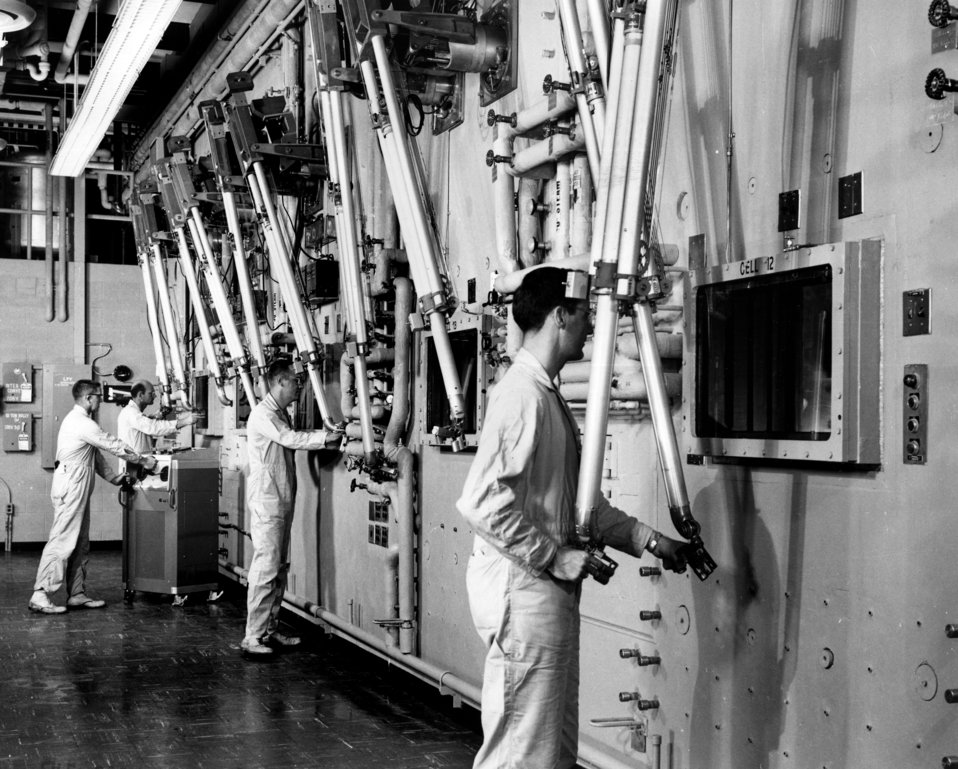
Operators Using Mechanical Arms at Hot Cells ORNL

58-466-b DOE photo Ed Westcott 6-9-1958 Oak Ridge Tennessee